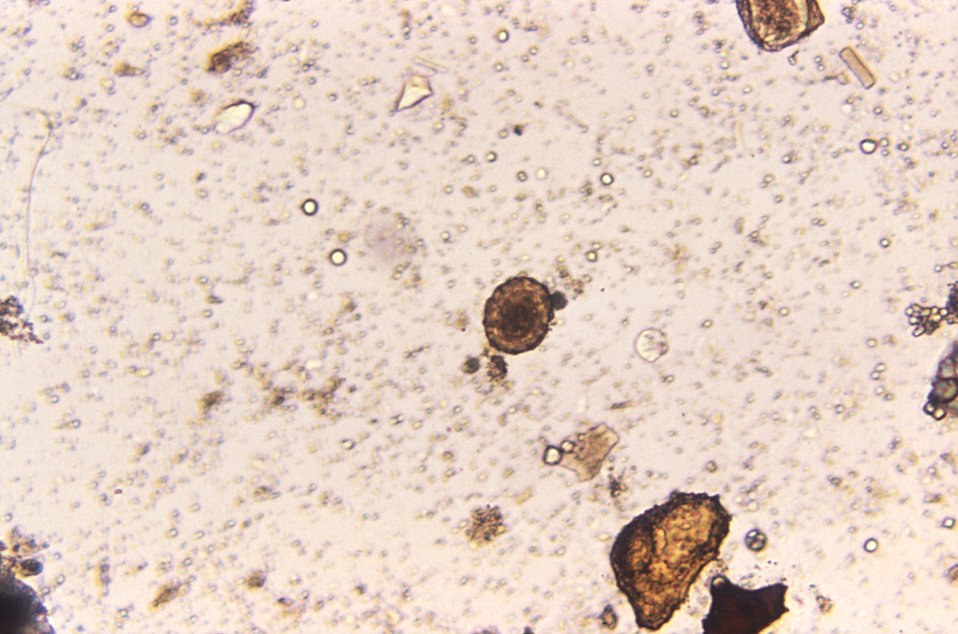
Magnified 125X, this photomicrograph revealed the presence of a fertile Ascaris sp. egg that was found in an unstained formalin-preserved stool sample. See PHIL 411 for an example of an unfertilized Ascaris lumbricoides egg.Geographic Distribution: